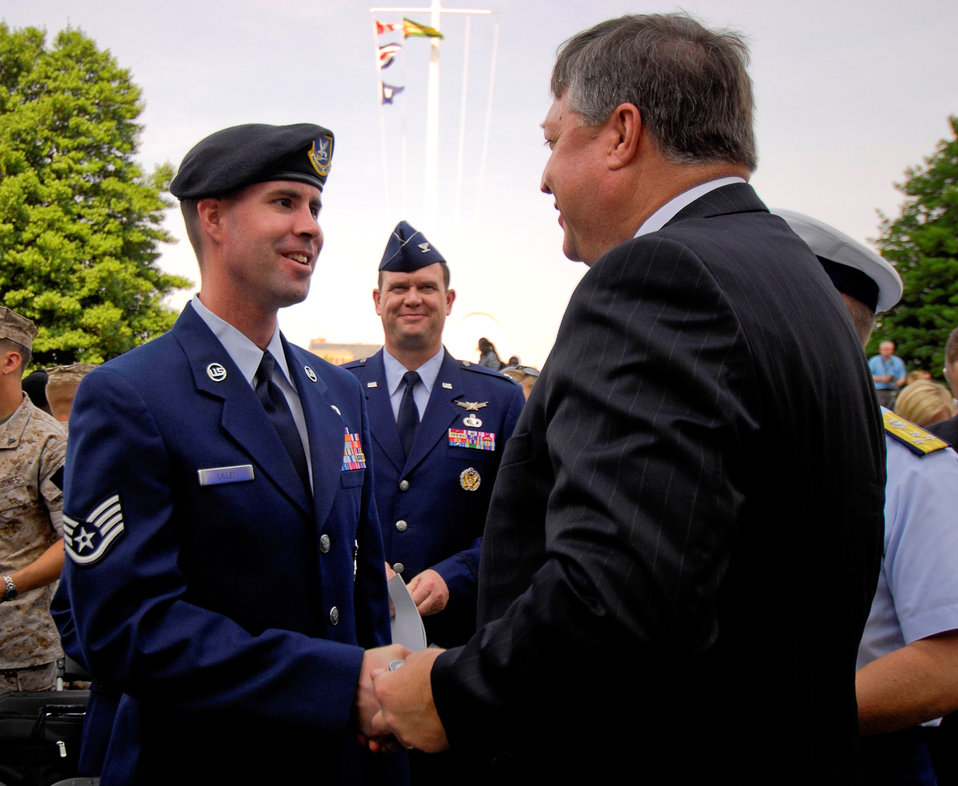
Presidential groundbreaking

Staff Sgt. Scott Lilley greets Acting Secretary of the Air Force Michael B. Donley July 3 following a military medical center groundbreaking ceremony in Bethesda, Md.